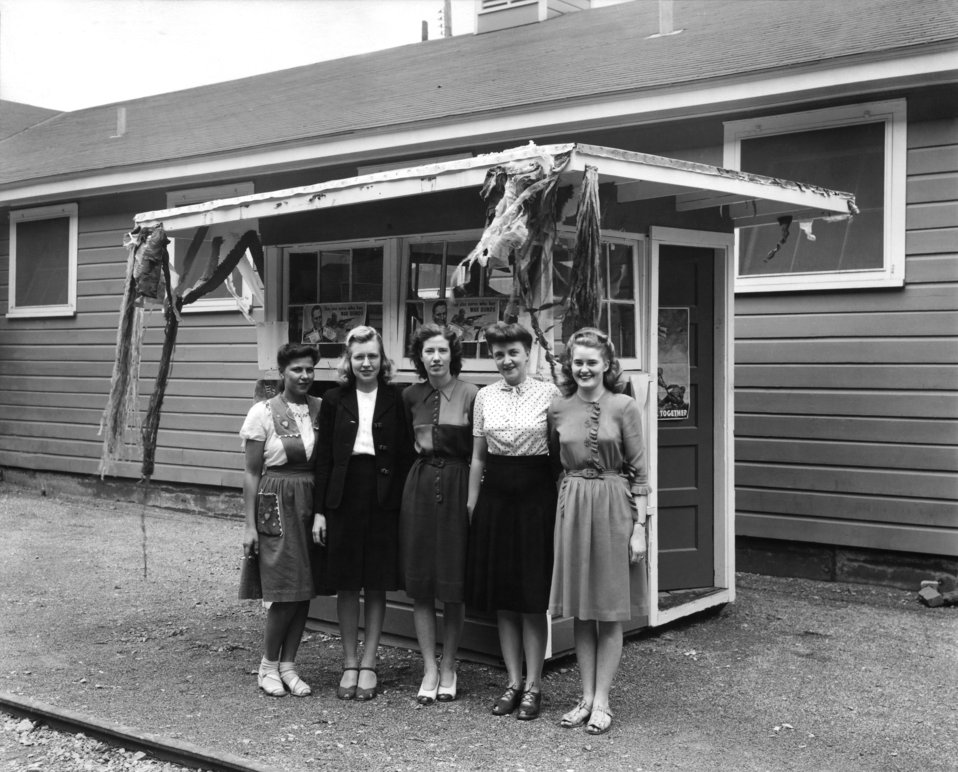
Group Young Ladies Outside Office Building Oak Ridge

S-341 DOE photo by Ed Westcott 1944 Oak Ridge Tennessee